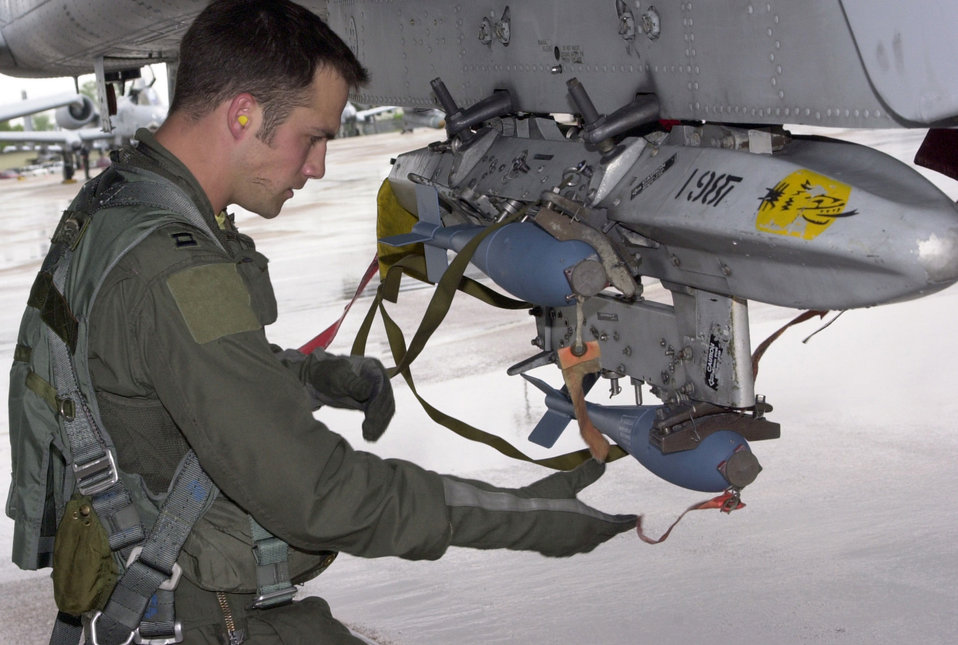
Stormy competition

ALEXANDRIA, La. -- Capt. Clint Eichelberger performs a preflight check on his A-10 Thunderbolt II, hoping to compete in Hawgsmoke 2004, a biannual A-10 bombing and tactical gunnery competition. Severe weather canceled the competition April 30. Captain Eichelberger is from the 357th Fighter Squadron at Davis-Monthan Air Force Base, Ariz.